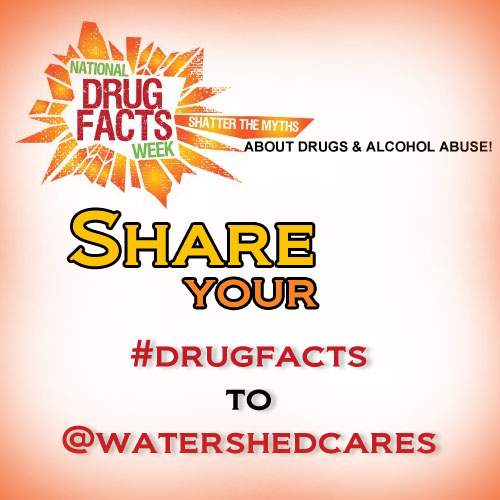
BLOG-DRUGFACTS-2-WATERSHED

Palm Beach County, Fl. NDFW Events 2013